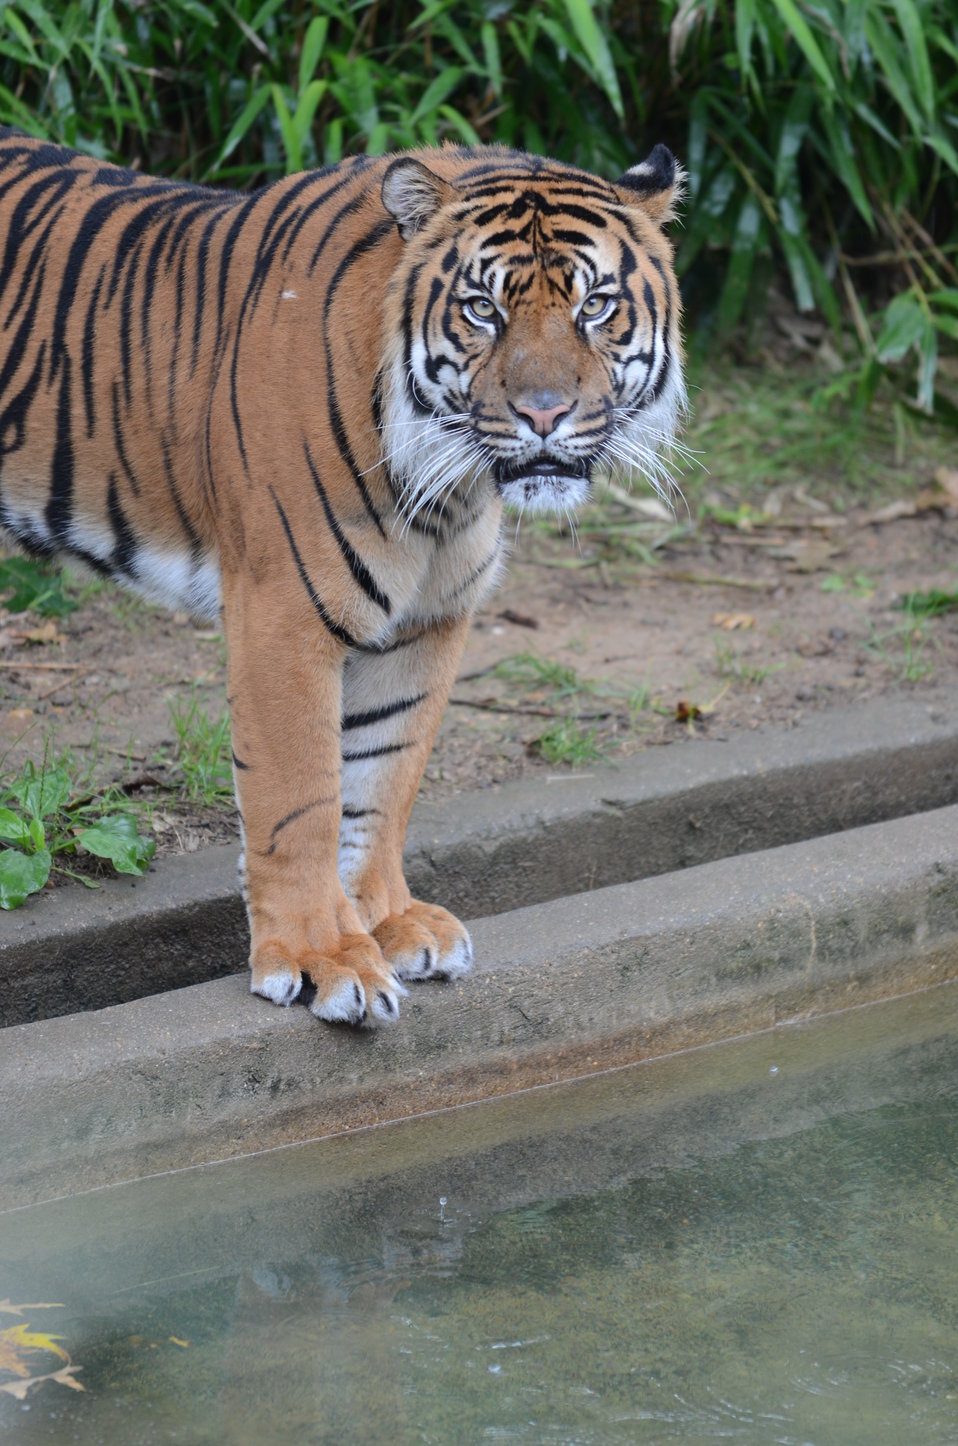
Save Vanishing Species Stamp First Day of Issue